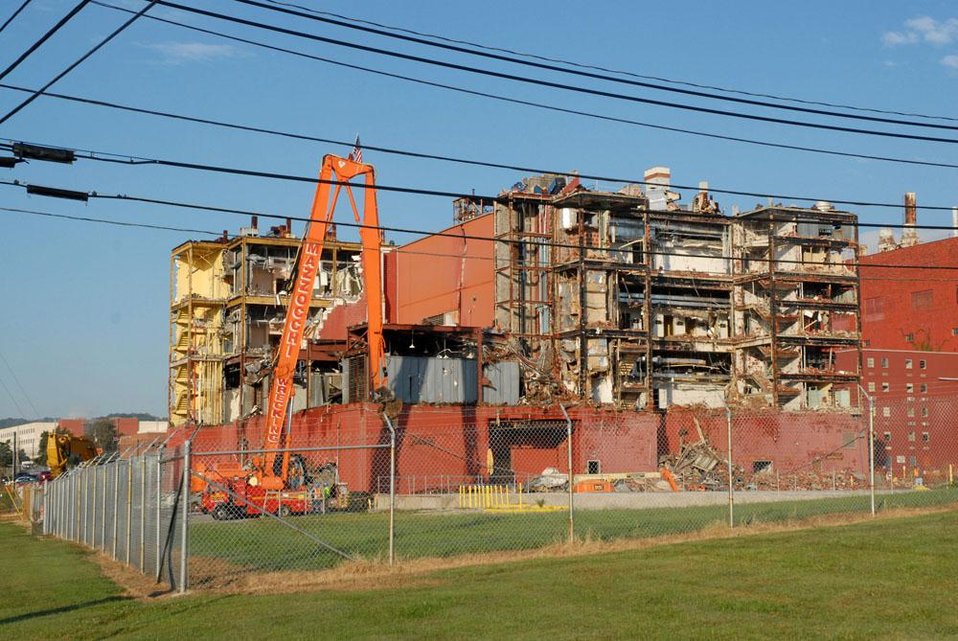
Before Photo Building 9211

The Y-12 National Security Complex used Recovery Act funds to demolish four Biology Complex facilities. These photos show the site of Building 9211 before and after demolition.